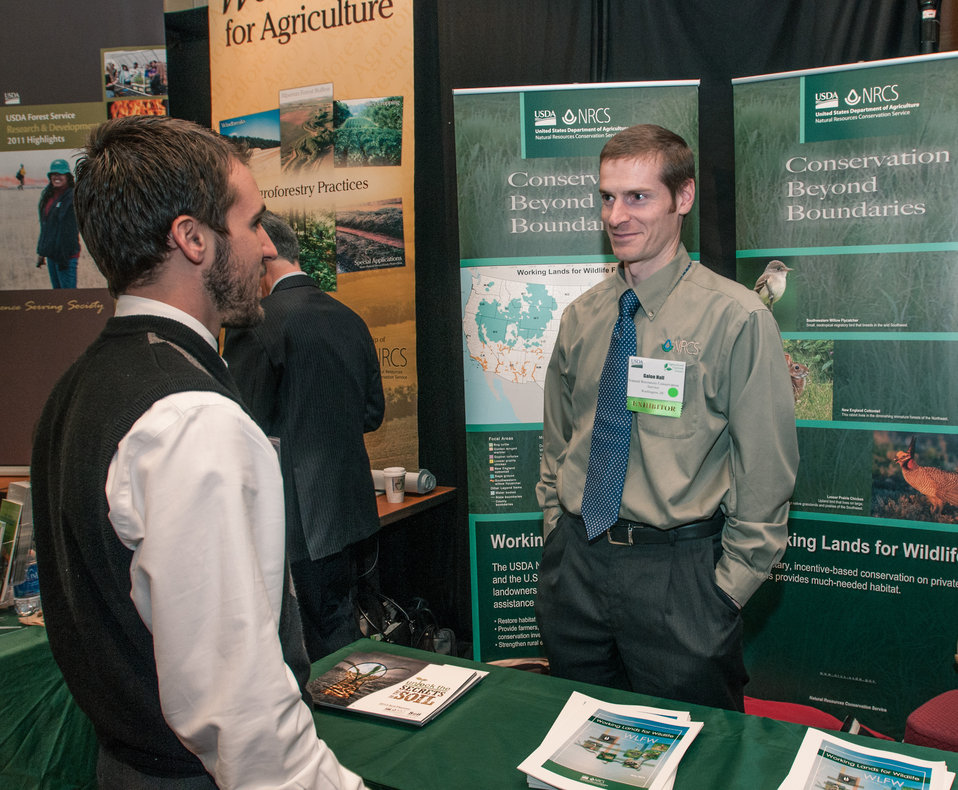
U.S. Department of Agriculture (USDA) Natural Resources Conservation Service’s (NRCS) Galon Hall, right, talks with a participant of the 2013 Agricultural Outlook Forum, held at the Crystal Gateway Marriott Hotel, Arlington, Virginia on Thursday, Feb. 21, 2013. This annual Forum brings together producers, policymakers, and business, government, and industry leaders to meet, exchange ideas, and discuss timely agriculture issues.